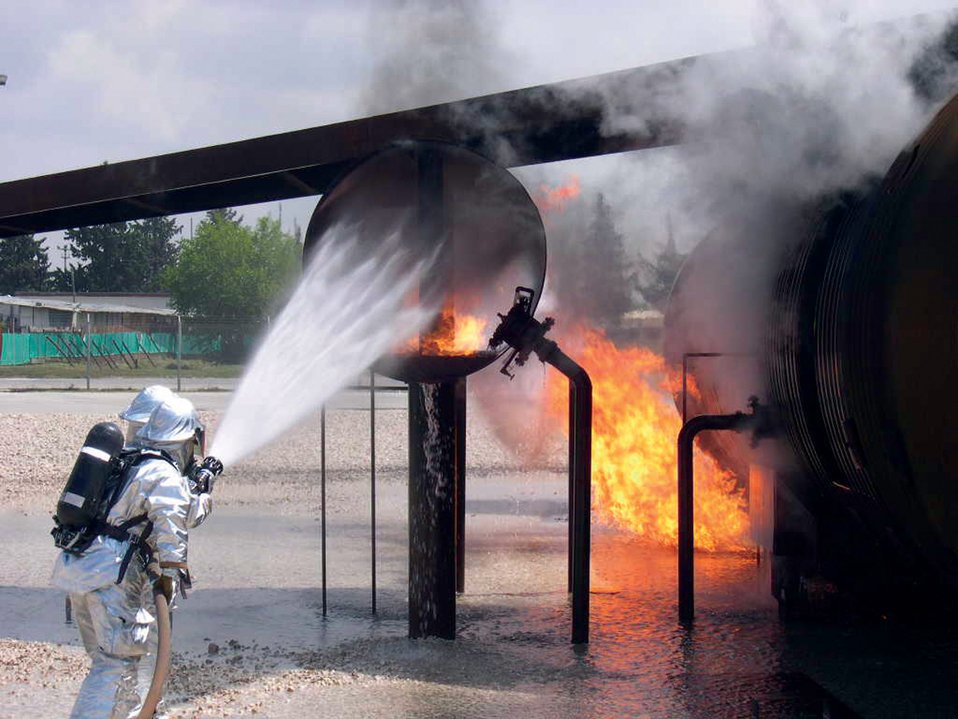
Fire battle

INCIRLIK AIR BASE, Turkey -- Firefighters put out a mock engine fire here. To make training realistic, firefighters battle infernos using a special airplane fire trainer that combines many parts of different planes to simulate the vast array of aircraft in the Air Force inventory.